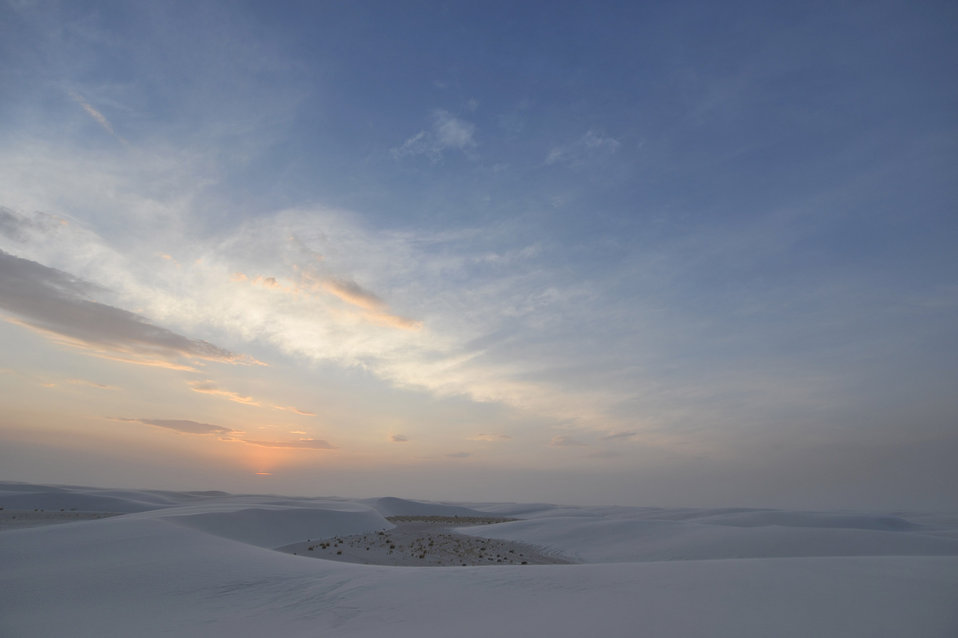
White sands 8

White sands national monument,new mexico.